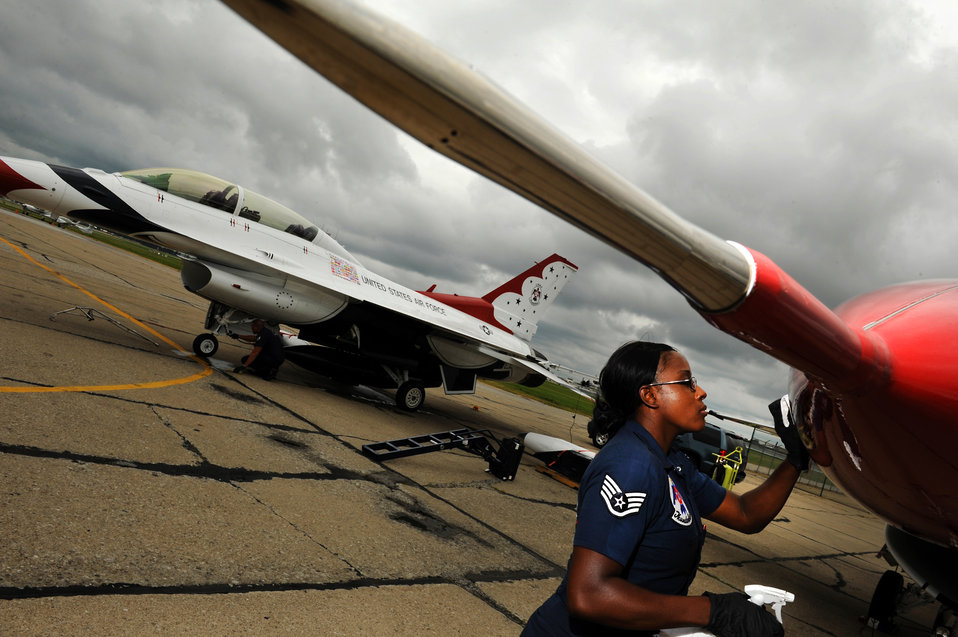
Shined up

Staff Sgt. Tacota LeMuel wipes down an Air Force Thunderbird F-16 Fighting Falcon during the Cleveland National Air Show Sept. 5, 2011, at the Cleveland Hopkins Airport . LeMuel is the Thunderbird 7 dedicated crew chief.